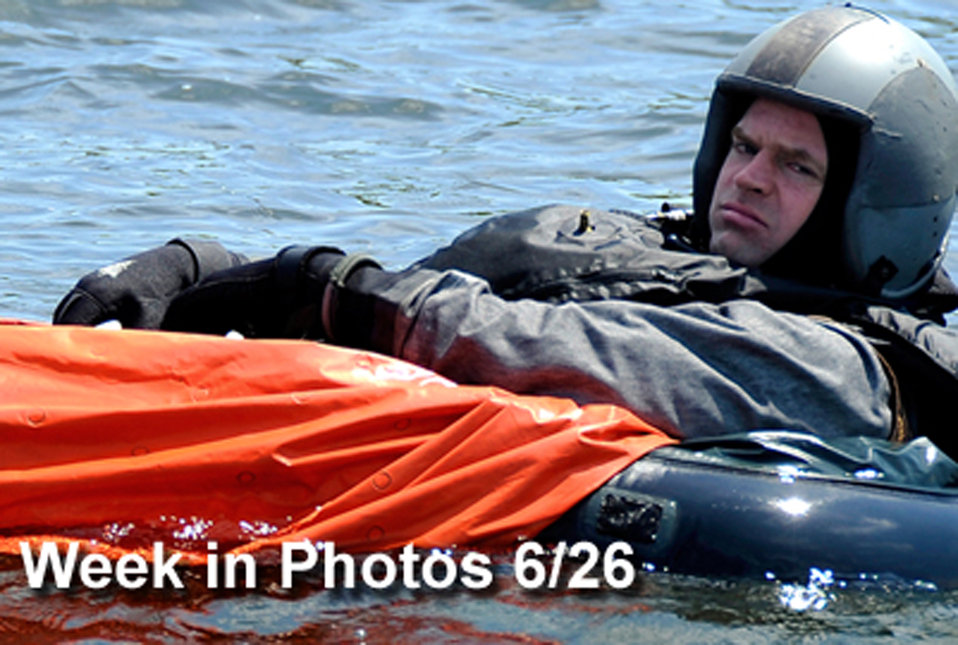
Week in Photos 6/26

Air Force Week in Photos for June 26 highlights photos from around the Air Force. In this photo by Senior Airman Chad C. Strohmeyer, Maj. Wesley Hales awaits